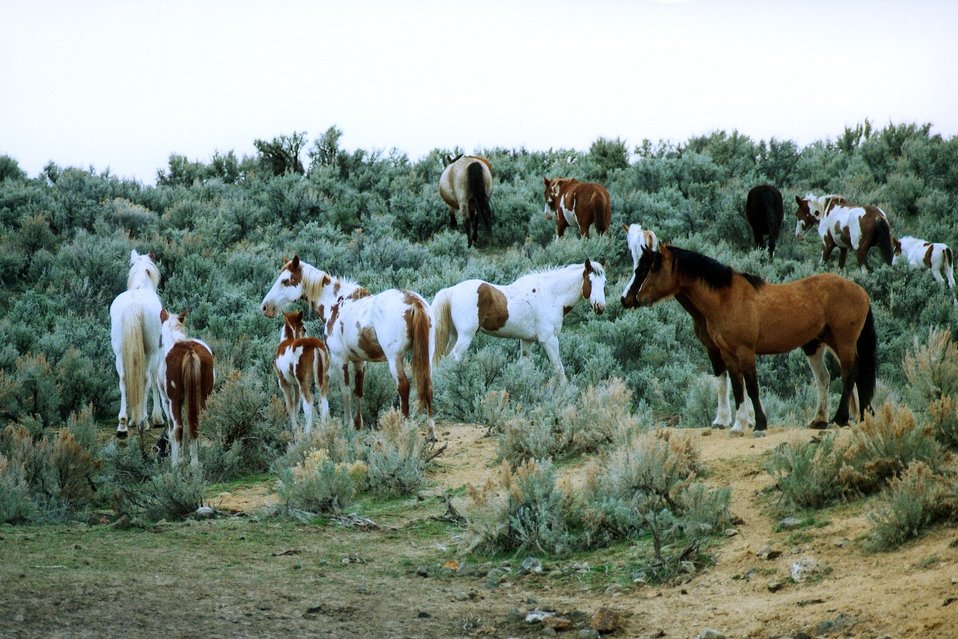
Medium shot of (alpha male) stallion, mares, colts, and foal.